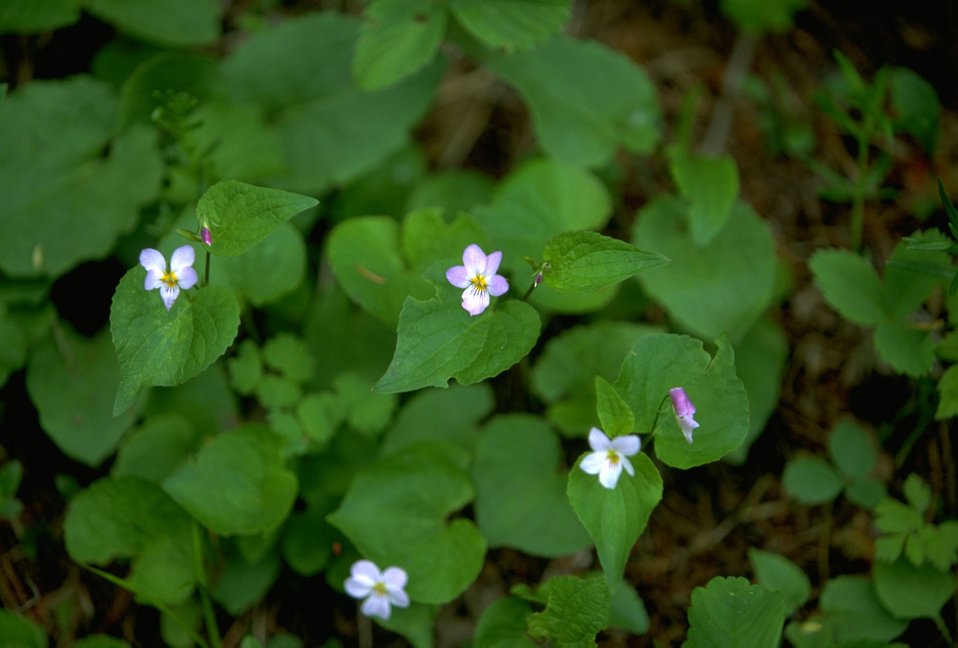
White and purple flowers on a background of large green leaves